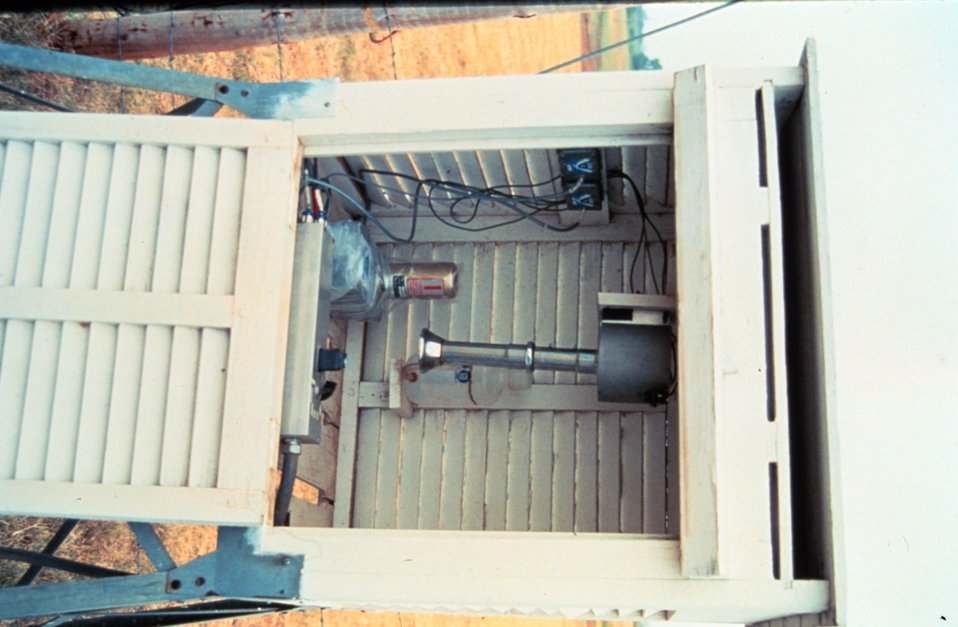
Standard instrument shelter (called a Stevenson Screen) used by NSSL. Shelter houses temperature, pressure, and relative humidity instruments. Observer comes to shelter to take readings. The shelter is a wooden box painted white with double-louvered sides. It is mounted on a stand 4 feet above the ground.